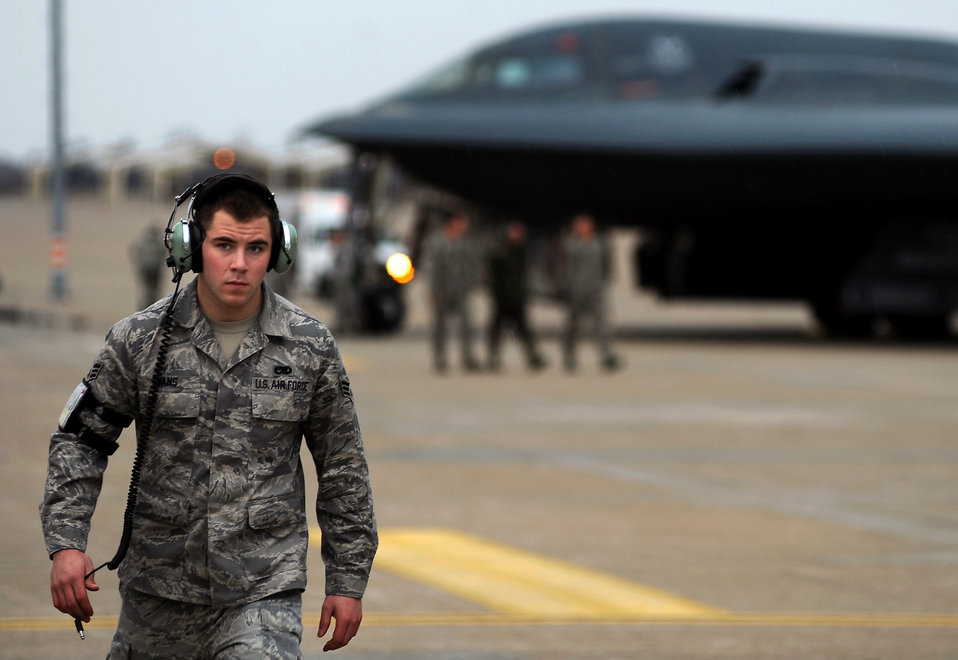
Operation Odyssey Dawn

WHITEMAN AIR FORCE BASE Mo. 509th Aircraft Maintenance Squadron, maintainers and crew chiefs, prepare B-2 Stealth Bombers for Operation Odyssey Dawn March 19, 2011.